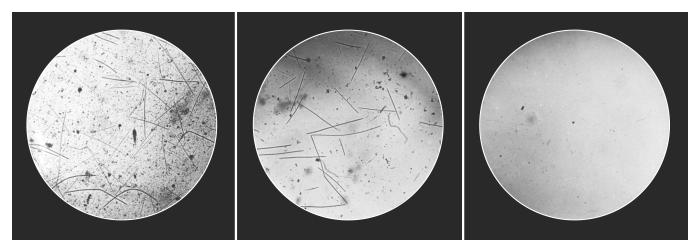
These three photomicrographic images revealed the bacteria that were present in water samples retrieved from Granite Falls, Minnesota on September 25, 1934. The samples were obtained by the Minnesota State Board of Health, Division of Sanitation after adjustments were made to an intown industrial plant. Left to right, the plates represent raw, settled, and filtered water respectively.